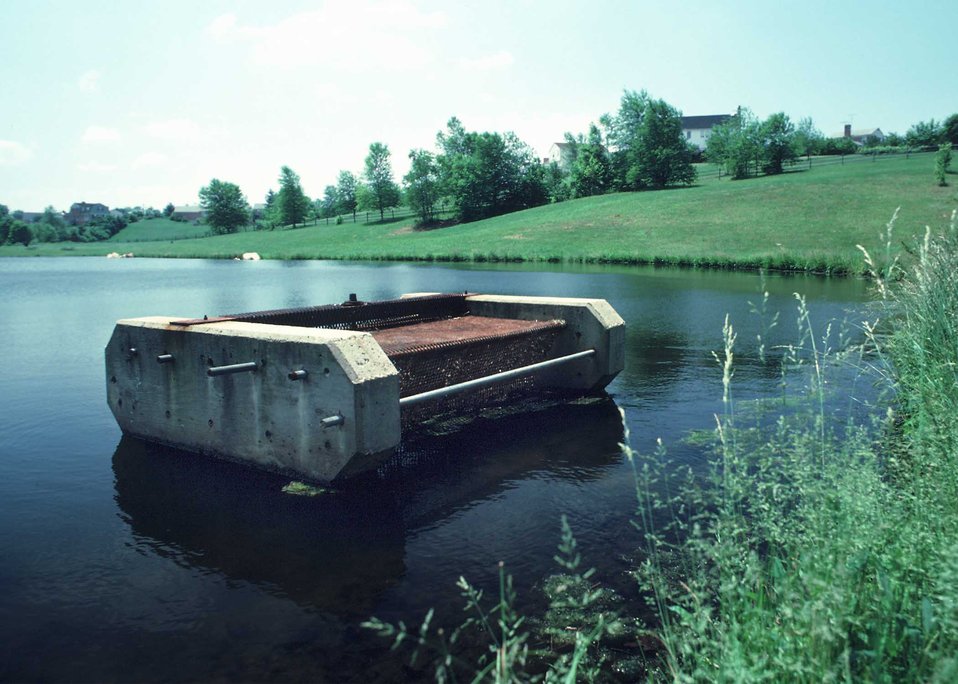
A containment structure keeps debris from clogging the oulet on this pond. The pond was originally constructed to contain sediment during the construction of the nearby development.